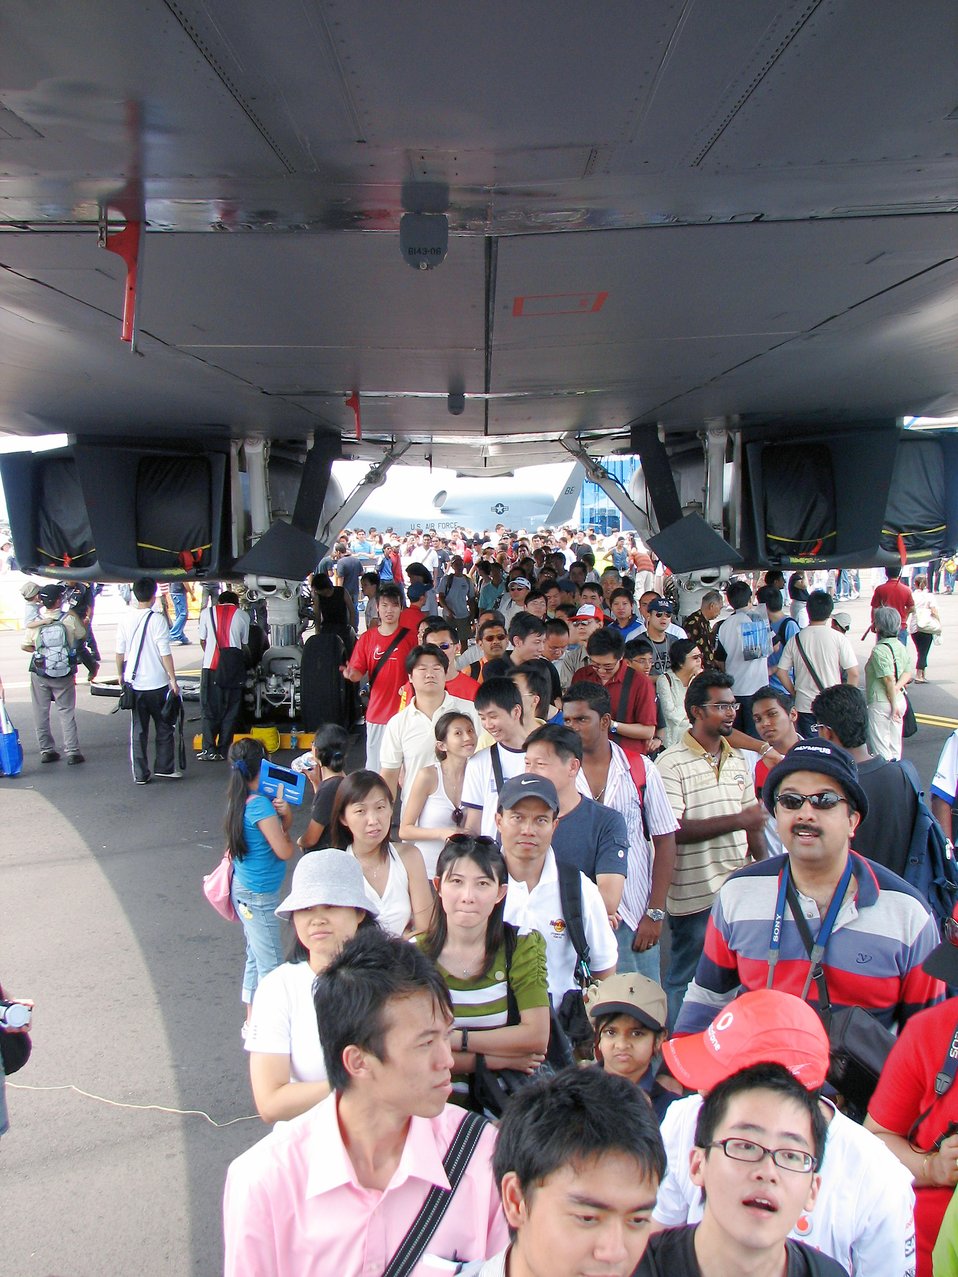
American airpower on display

Spectators wait in line to peer inside the cockpit of a B-1B Lancer aircraft Feb. 23 during a public day at the 2008 Singapore Air Show. The United States provided Air Force F-16 Fighting Falcon and Navy F/A-18 Super Hornet demonstations and seven aircraft for static display.